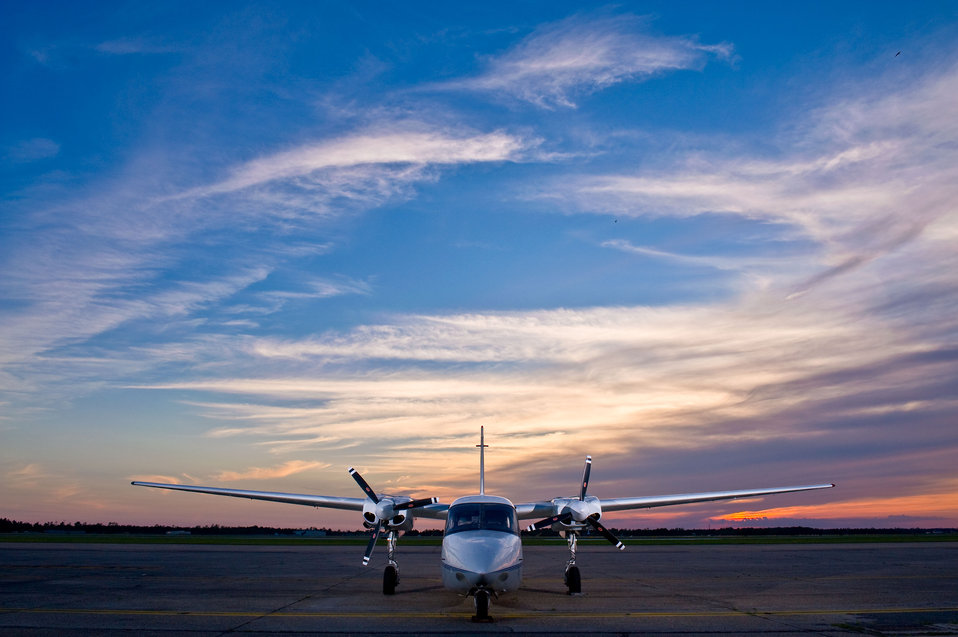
EPA's ASPECT plane

May 9, 2010 - U.S. EPA's Airborne Spectralphotometric Environmental Collection Technology (ASPECT) aircraft.